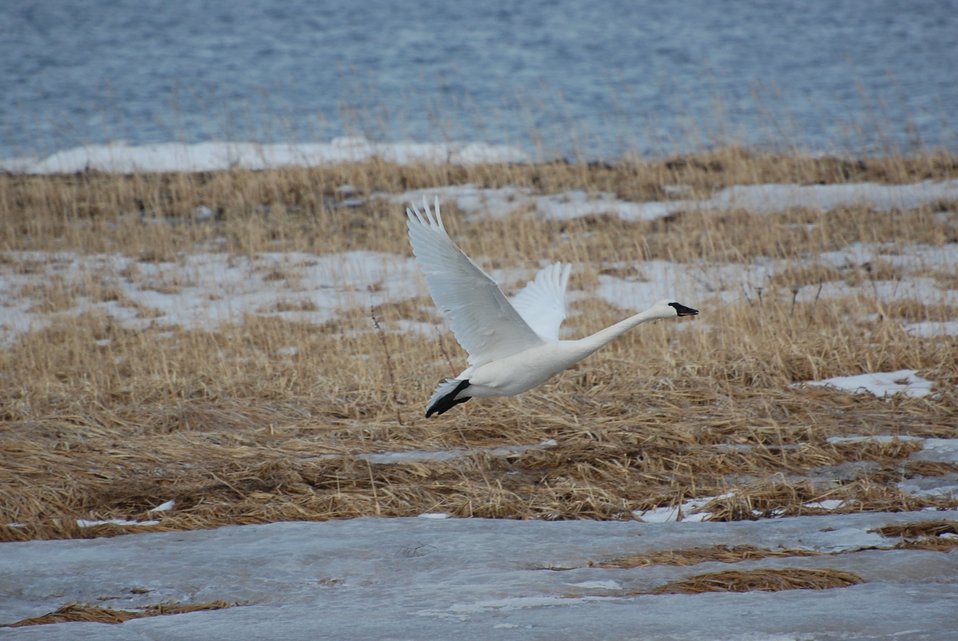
Tundra Swan

Izembek National Wildlife Refuge